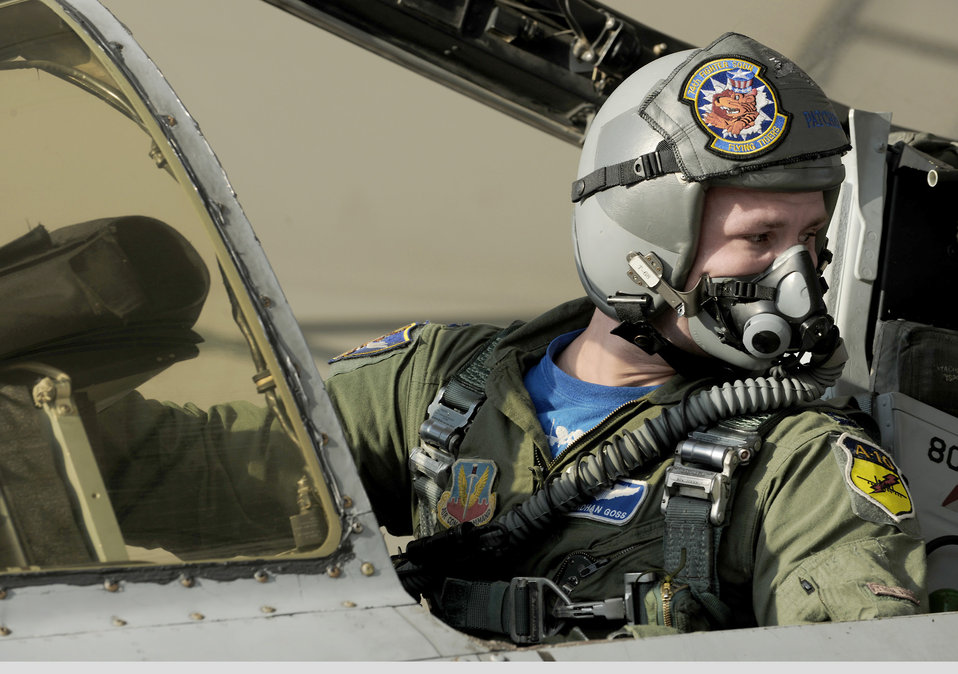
Enhanced Mojave Viper Exercise

Capt. Brendhan Goss makes eye contact with his crew chief during a preflight inspection before closing the canopy on an A-10C Thunderbolt II Aug. 13, 2010, at Moody Air Force Base, Ga. Captain Goss is an instructor pilot with the 74th Fighter Squadron.